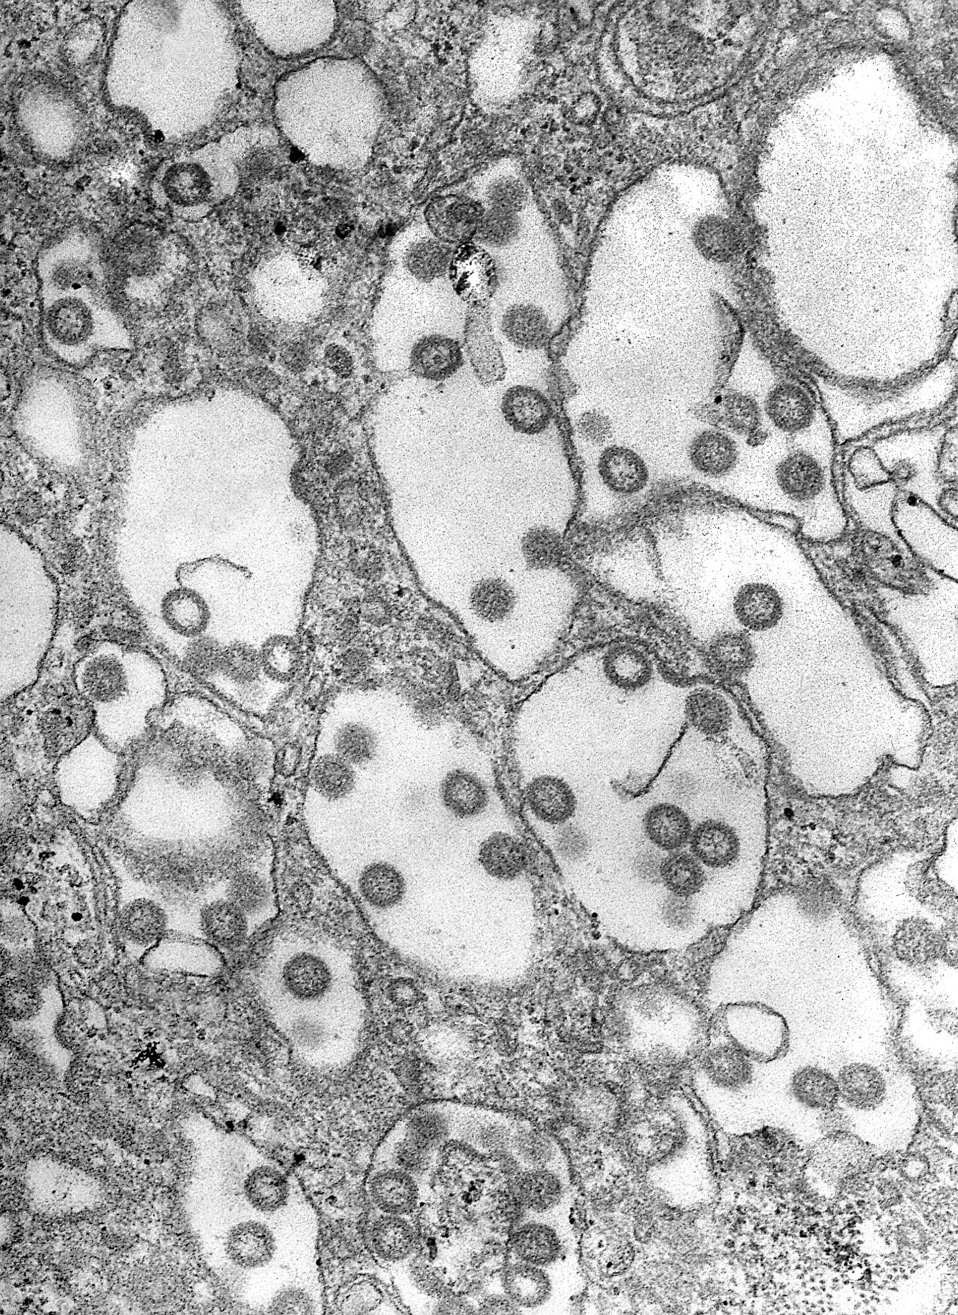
Electron micrograph of the Rift Valley Fever virus.